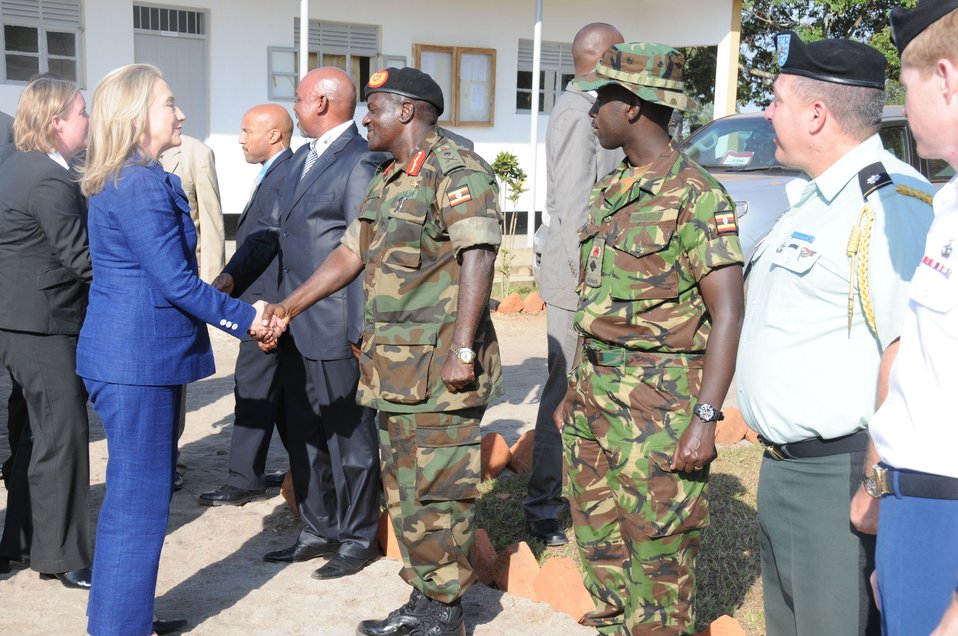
Secretary Clinton Greets Lieutenant General Wamala

U.S. Secretary of State Hillary Rodham Clinton greets Lieutenant General Katumba Wamala at the Uganda People’s Defense Force (UPDF) Kasenyi military base as other American and Ugandan military personnel look on in Kampala, Uganda on August 3, 2012.